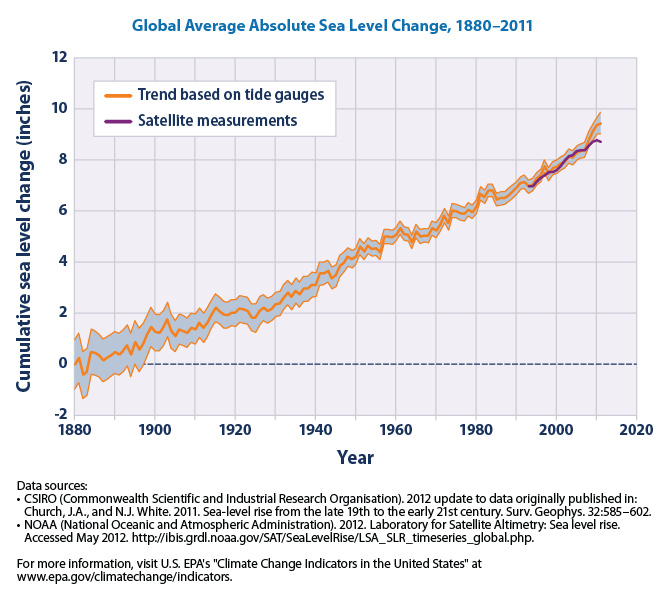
Climate Indicators - Global Average Absolute Sea Level Change

From 1993 to 2011, average sea level rose at a rate roughly twice as fast as the long term trend.